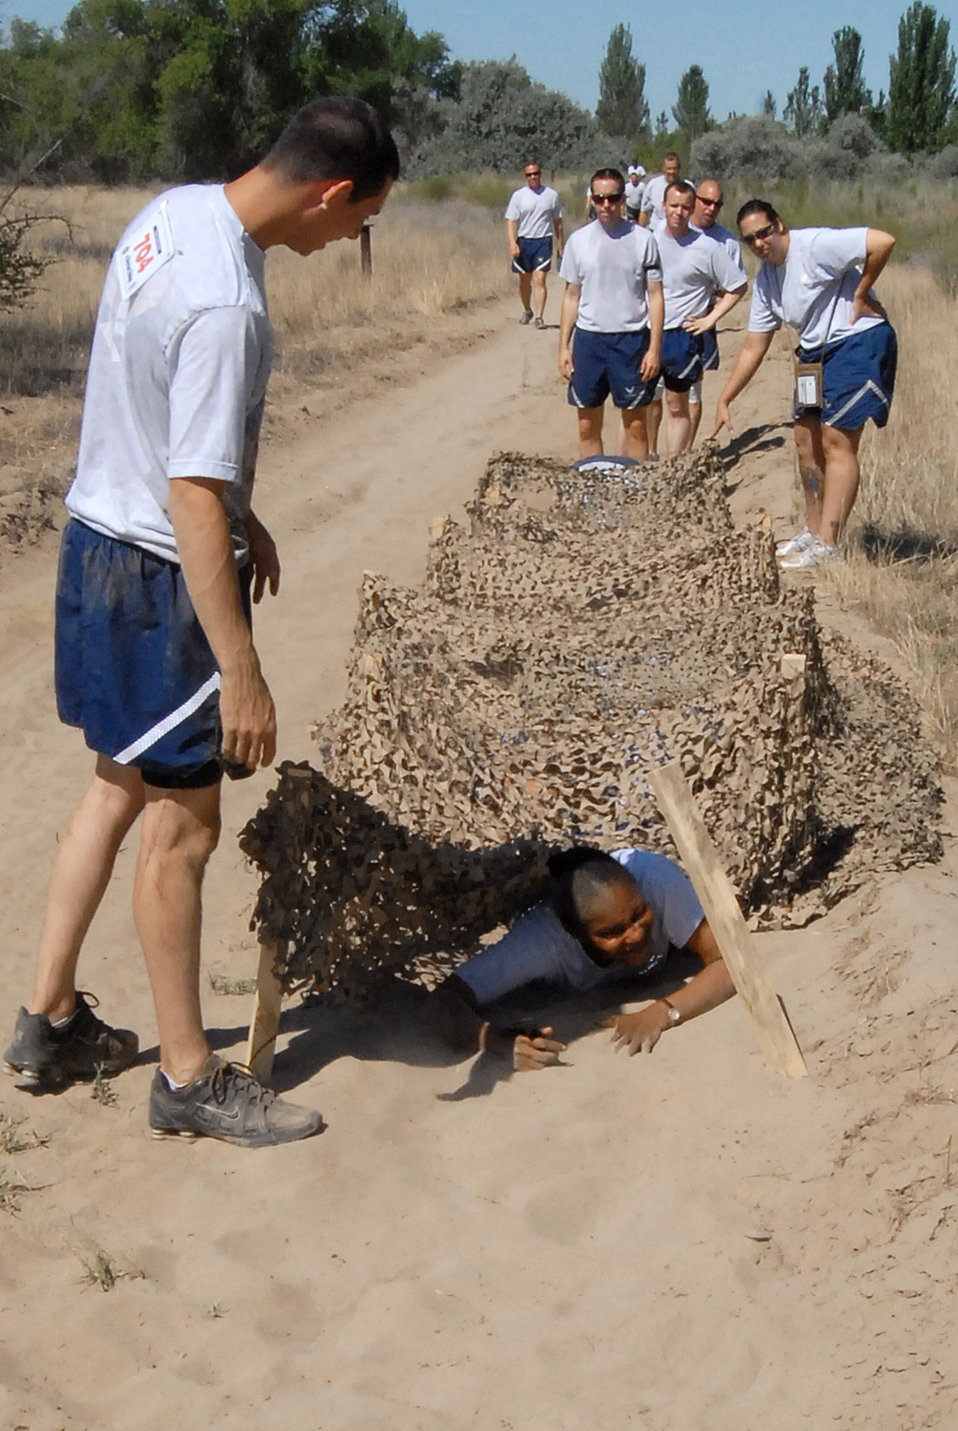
Kyrgystan 5K Mud Run

Staff Sgt. Ezechiel Espinoza cheers on 376th Expeditionary Logistics Readiness Squadron mud run team member Tech. Sgt. Shoney Jackson at the Transit Center at Manas, Kyrgyzstan, July 11, 2010. Airmen took part in the course to help raise money for charity.